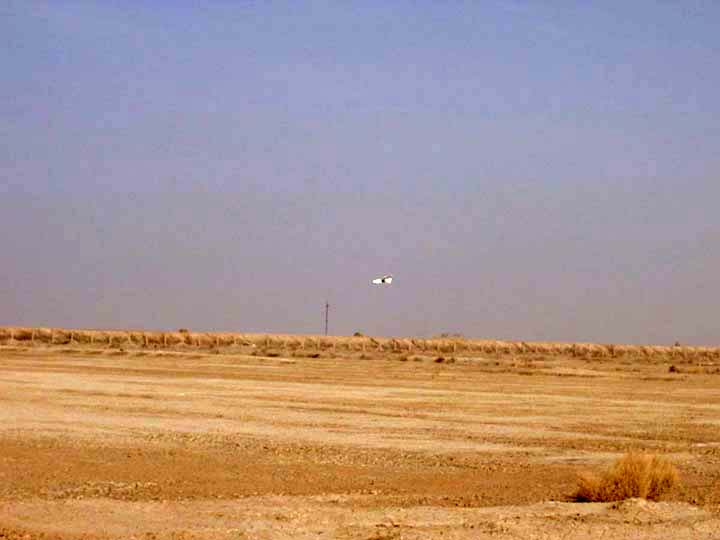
Desert Hawk UAV patrols Tallil

TALLIL AIR BASE, Iraq -- A Desert Hawk returns after patrolling the sky over here. The Desert Hawk is a miniature unmanned aerial vehicle used by security forces to see beyond base perimeters providing a rapid assessment of threats.